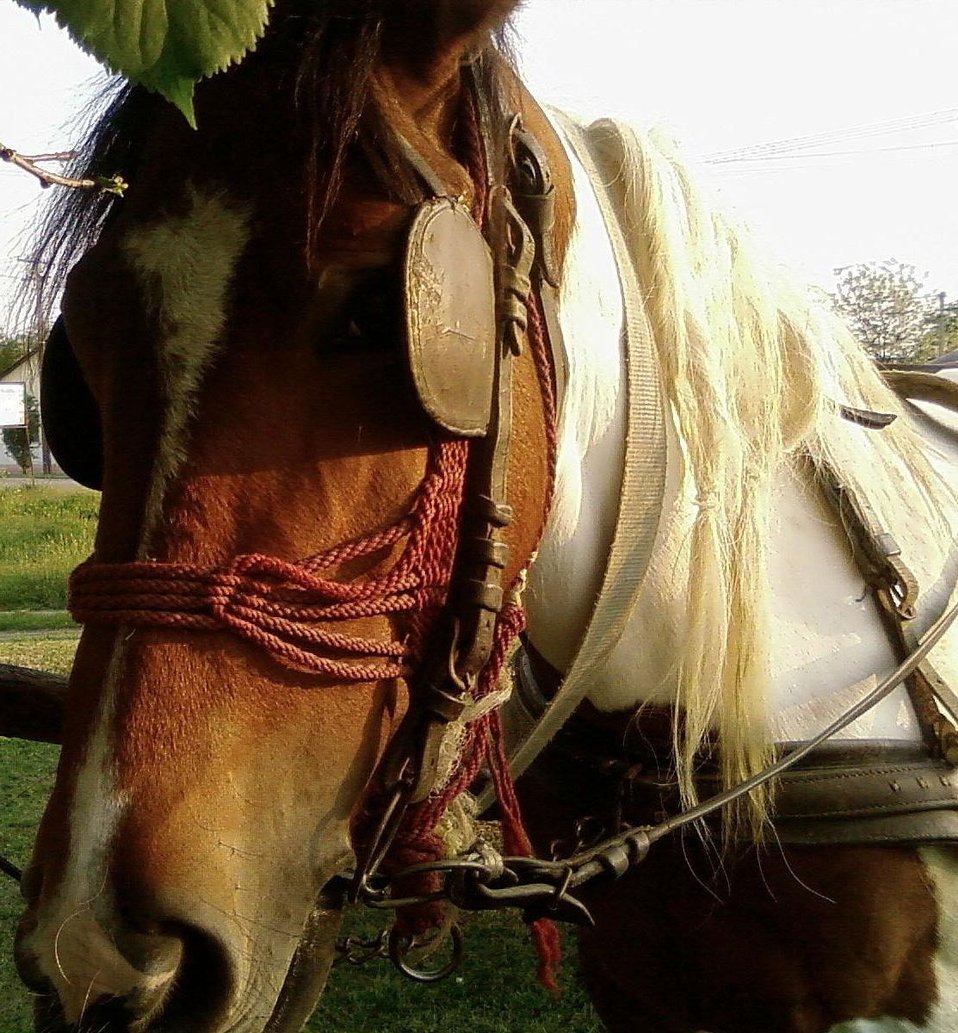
English:
Image title: Beautiful horse head profile Image from Public domain images website, http://www.public-domain-image.com/full-image/fauna-animals-public-domain-images-pictures/horses-public-domain-images-pictures/beautiful-horse-head-profile.jpg.html